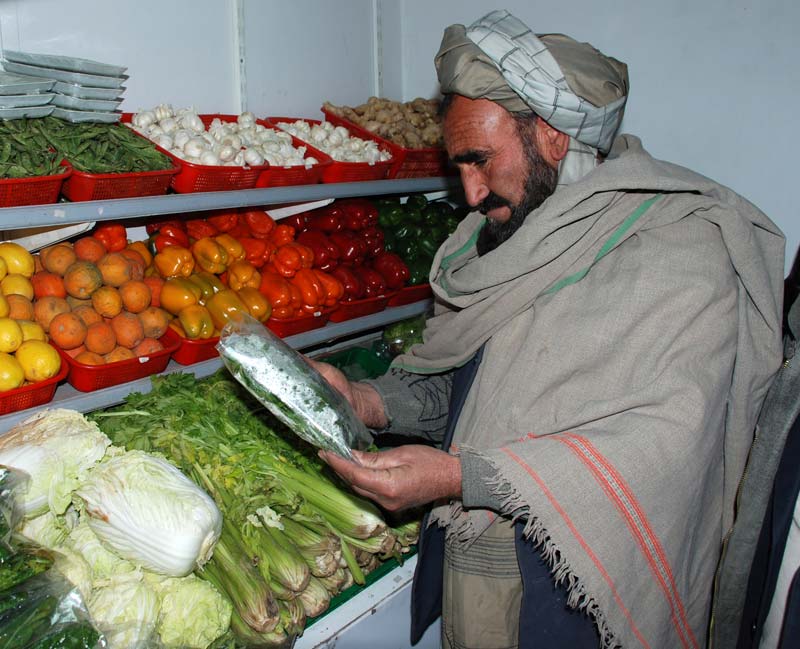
Badam Bagh Produce - ASAP